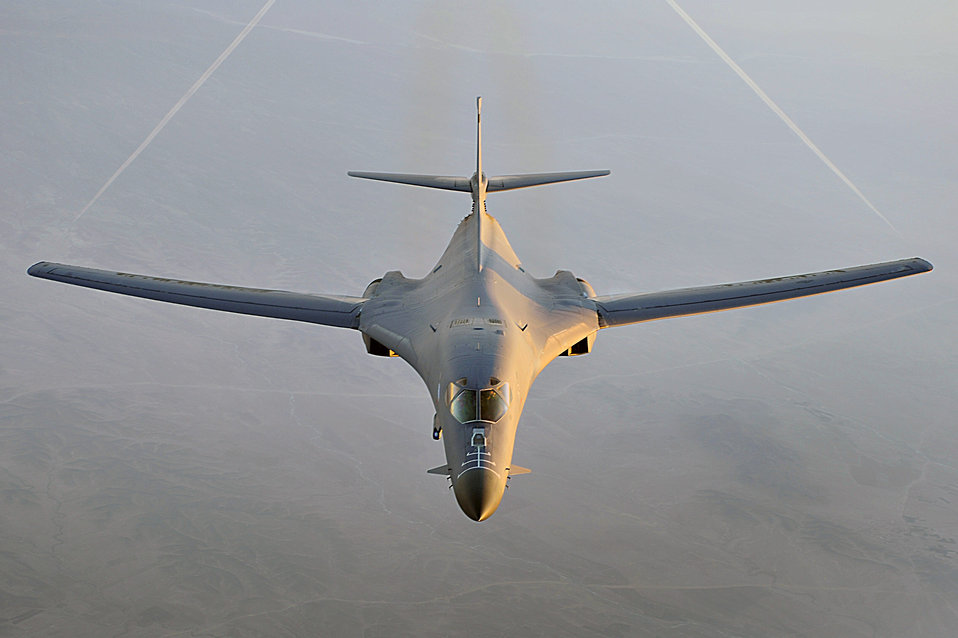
Dec. 6 airpower summary: B-1B deters enemy attacks

A B-1B Lancer flies a combat patrol over Afghanistan in support of Operation Enduring Freedom. The B-1B has the capability to carry guided and unguided weapons and deliver massive quantities of precision and non-precision weapons against specific targets.